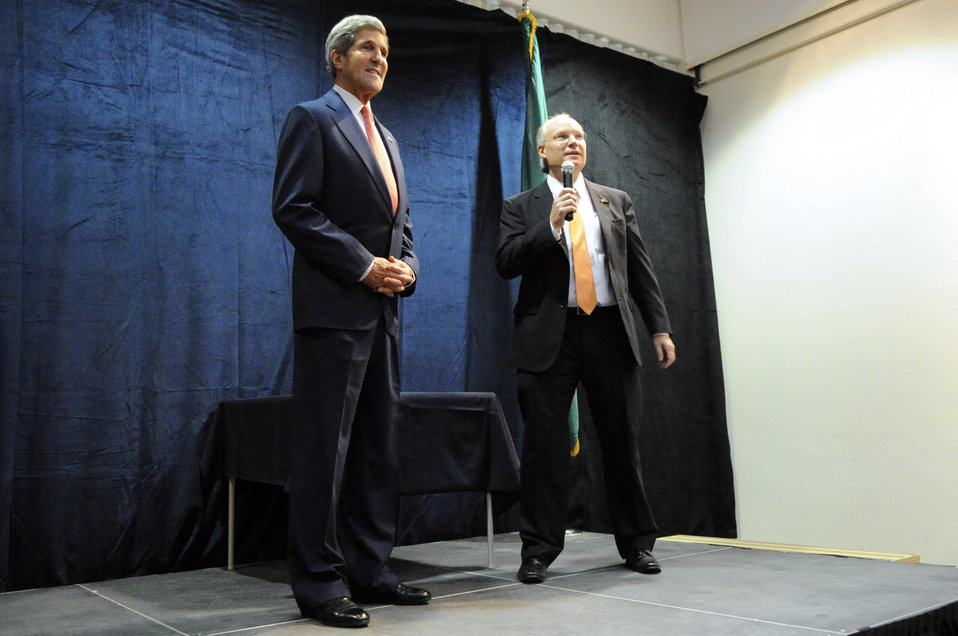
Chargé d'Affaires Lenderking Introduces Secretary Kerry to Embassy Riyadh

Embassy Riyadh Chargé d'Affaires Tim Lenderking introduces U.S. Secretary of State John Kerry to the staff of Embassy Riyadh on the second day of his visit to Saudi Arabia on November 4, 2013.